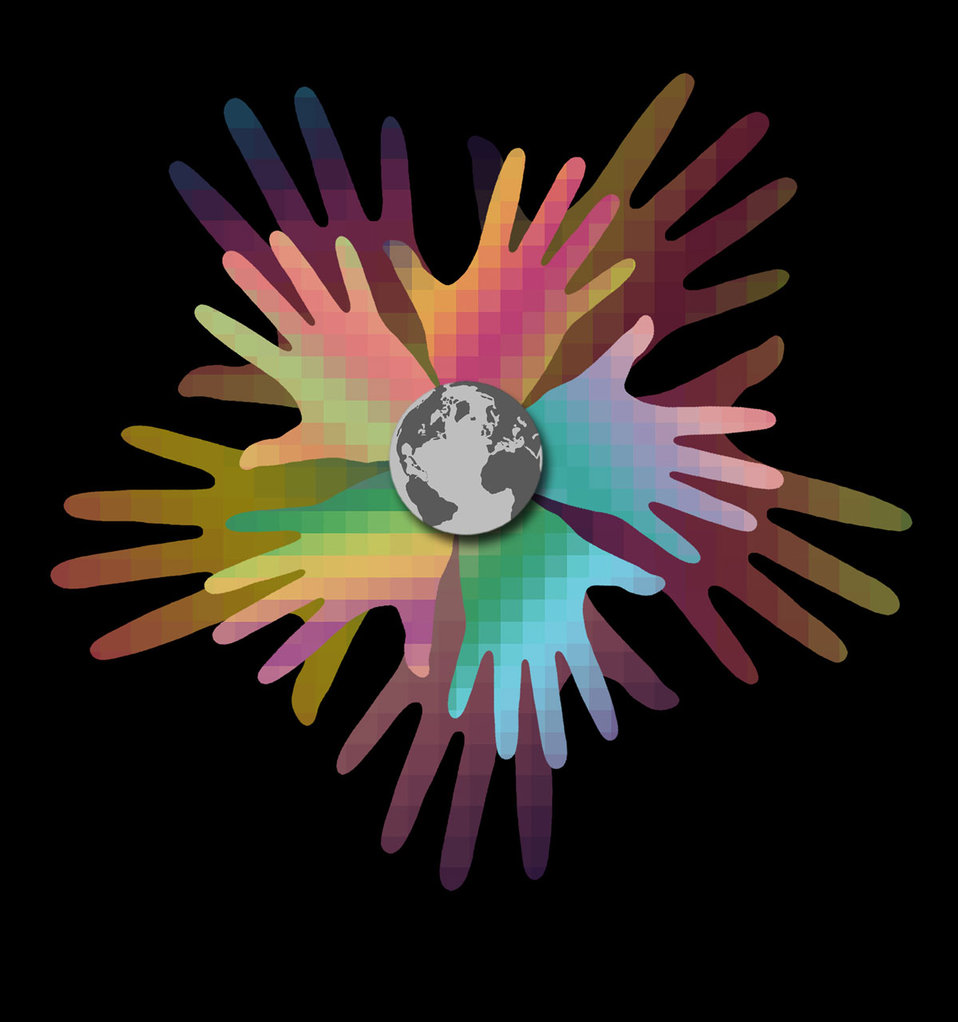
Hands of the world

Silhouettes of hands radiating from planet earth.